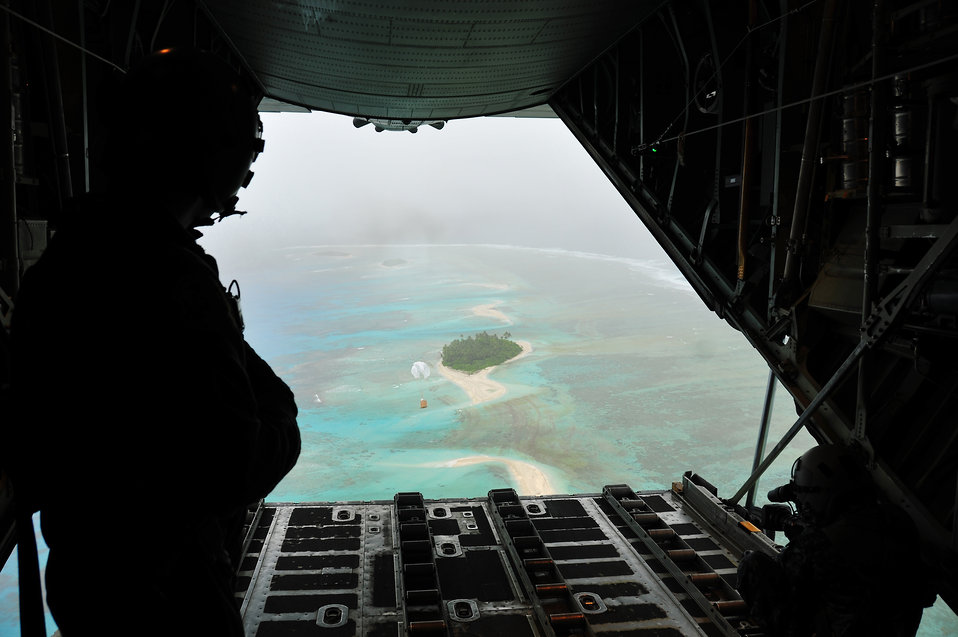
Operation Christmas Drop

A bundle of donated goods drifts to an island after being dropped out the back of a C-130 Hercules Dec. 16, 2009, during Operation Christmas Drop. The operation, the longest-running humanitarian airlift mission in the world, delivers supplies to remote islands of the Federated States of Micronesia.